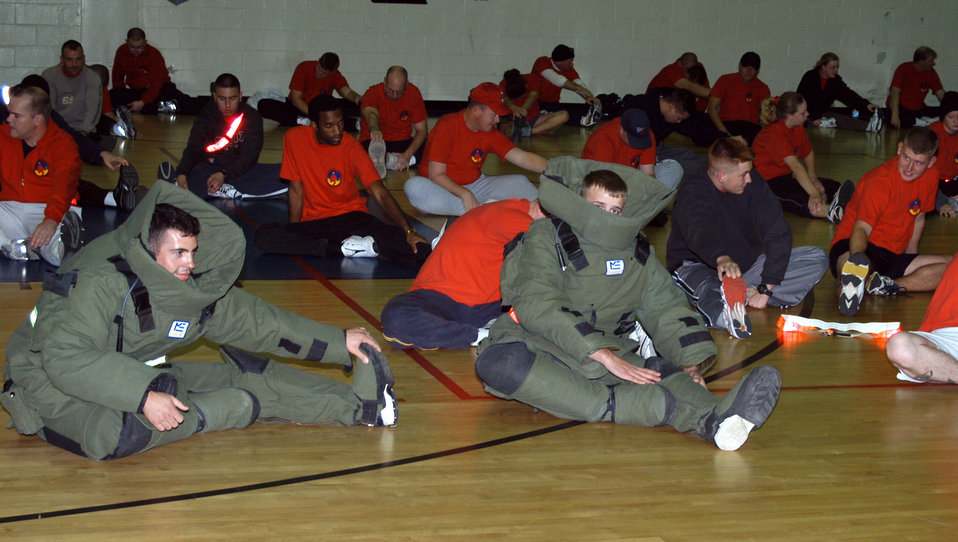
Don't bomb the test

KUNSAN AIR BASE, South Korea -- Senior Airman Eric Barger (left) and Airman 1st Class Greg Locke stretch while wearing their bomb suits during physical training. Barger and Locke ran 1.5 miles in the 65-pound suits to become more familiar with the limitations of movement while wearing them. Both airmen are assigned to the 8th Civil Engineer Squadron's explosive ordnance disposal flight.